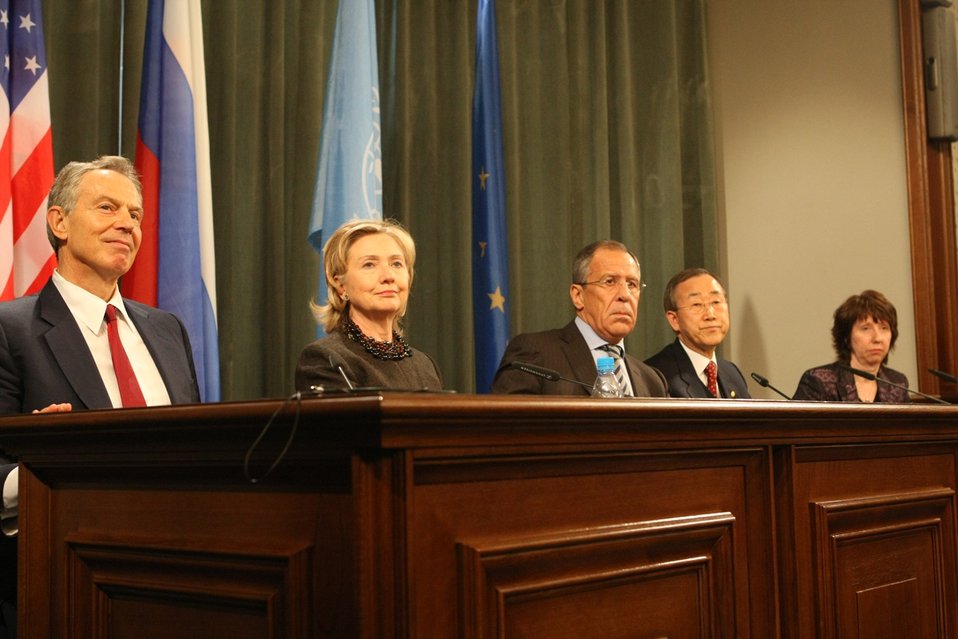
Secretary Clinton With Middle East Quartet

U.S. Secretary of State Hillary Rodham Clinton sits with Middle East Quartet. From left to right: Quartet Special Representative Tony Blair, U.S. Secretary of State Hillary Rodham Clinton, Russian Foreign Minister Sergey Lavrov, U.N. Secretary General Ban Ki-Moon, and E.U. High Representative Catherine Ashton in Moscow, Russia, March 19, 2010.